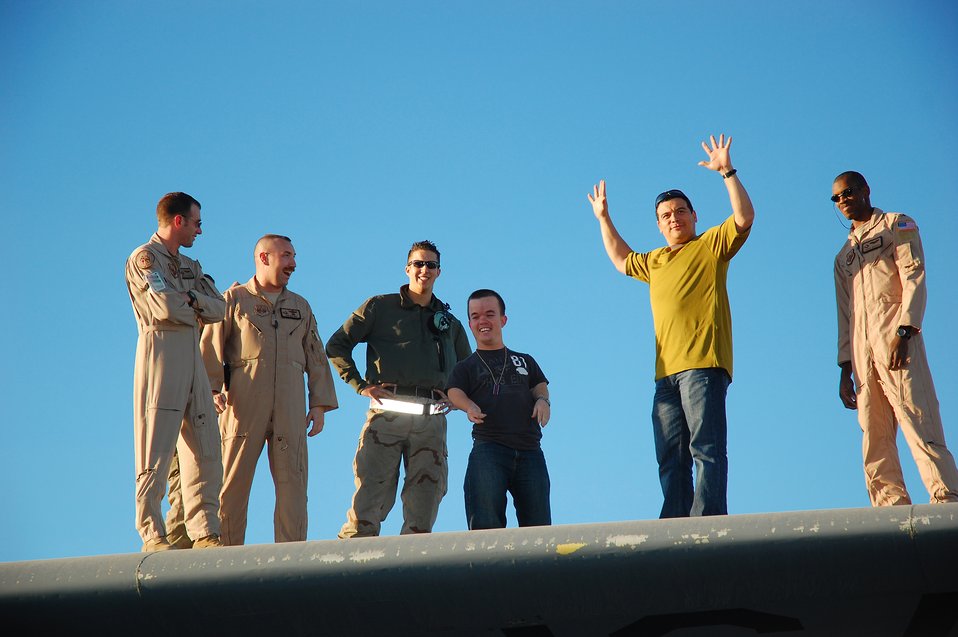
Carlos Mencia entertains deployed troops

Comedian Carlos Mencia stands on the wing of a C-130 Hercules while visiting members of the 386th Air Expeditionary Wing Nov. 28 in Southwest Asia. Mr. Mencia and his crew traveled throughout the Middle East providing entertainment for deployed servicemembers.